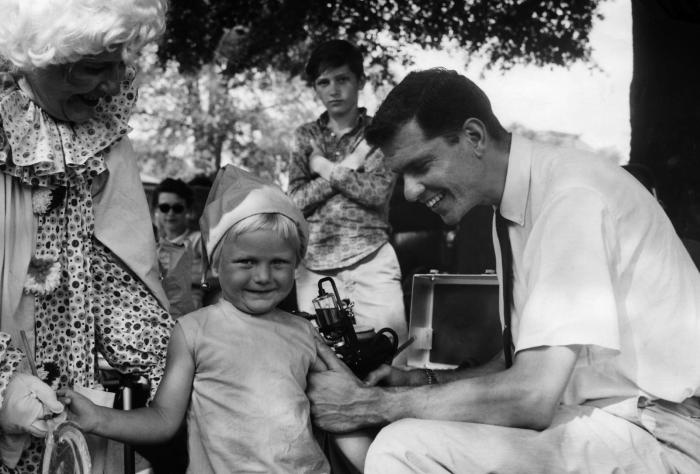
This 1991 photograph, taken at public health event, was showing a clown lightening the mood, as a smiling child received a vaccination. The image was used in a public health awareness campaign that demonstrated the ways in which public health workers could protect people from infectious diseases.